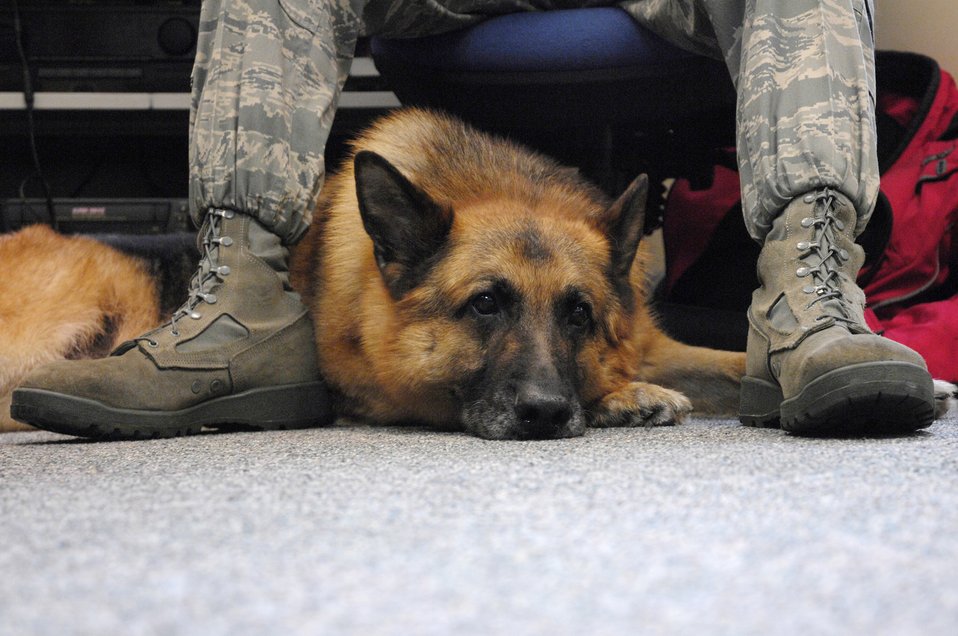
Ready for the rocker?

Whiskey relaxes with his handler Tech. Sgt. Chris Beavers at Royal Air Force Feltwell, England. Whiskey is retiring as an explosive protection military working dog because of medical reasons after serving more than six years at RAF Lakenheath, England.